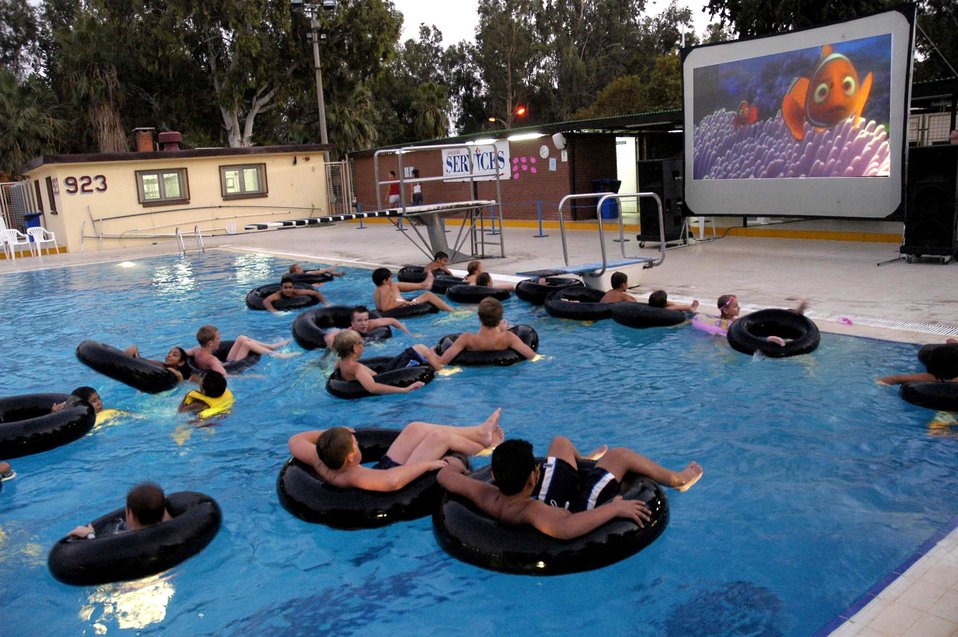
Goin' to the dive-in

INCIRLIK AIR BASE, Turkey -- Pool goers here had a unique opportunity to beat the heat recently when the 39th Services Squadron hosted its first